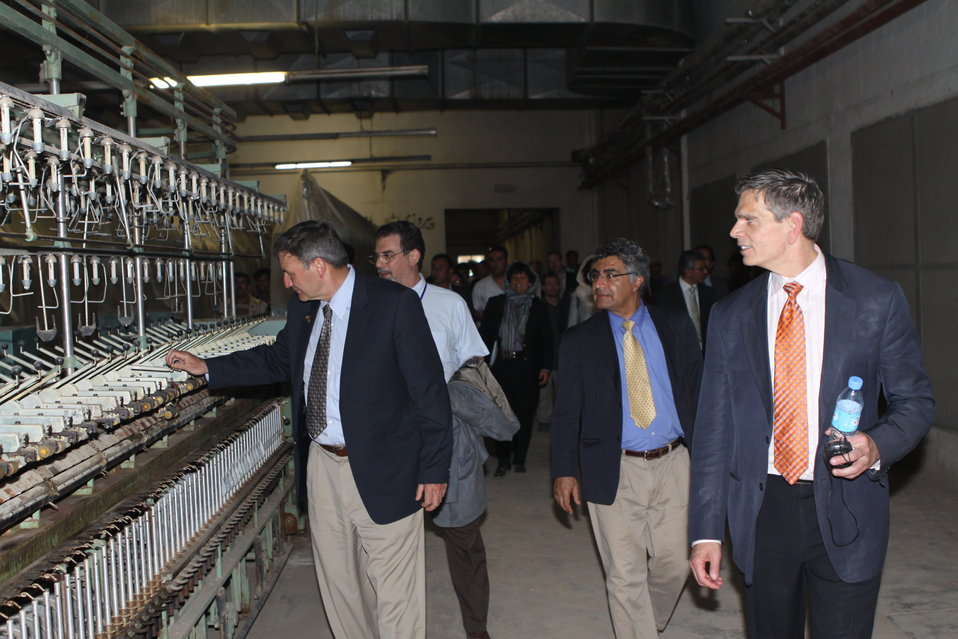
100525 Hirat Textile Company 753